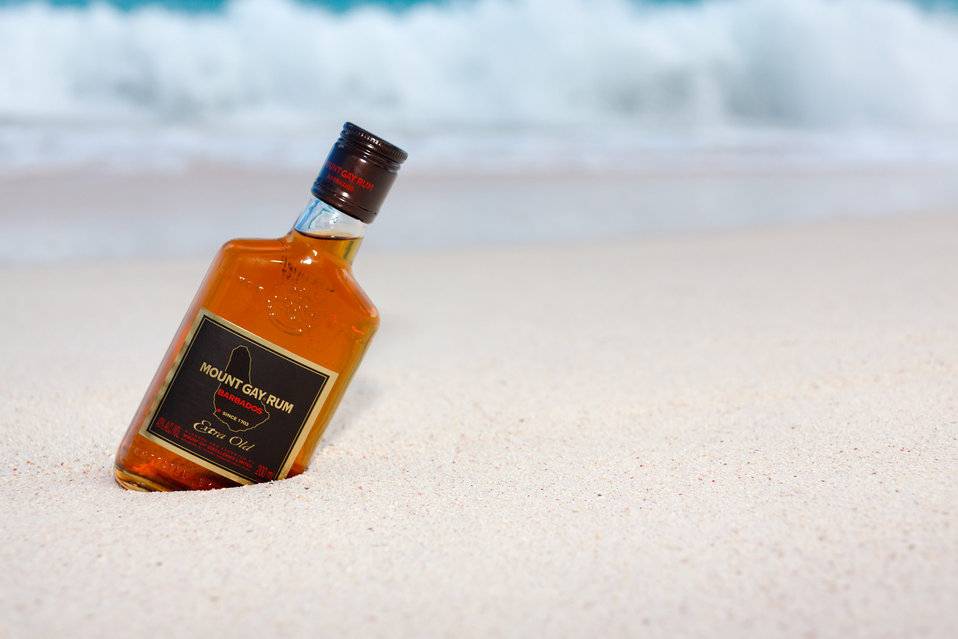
Bottle of rum on the beach in caribbean.